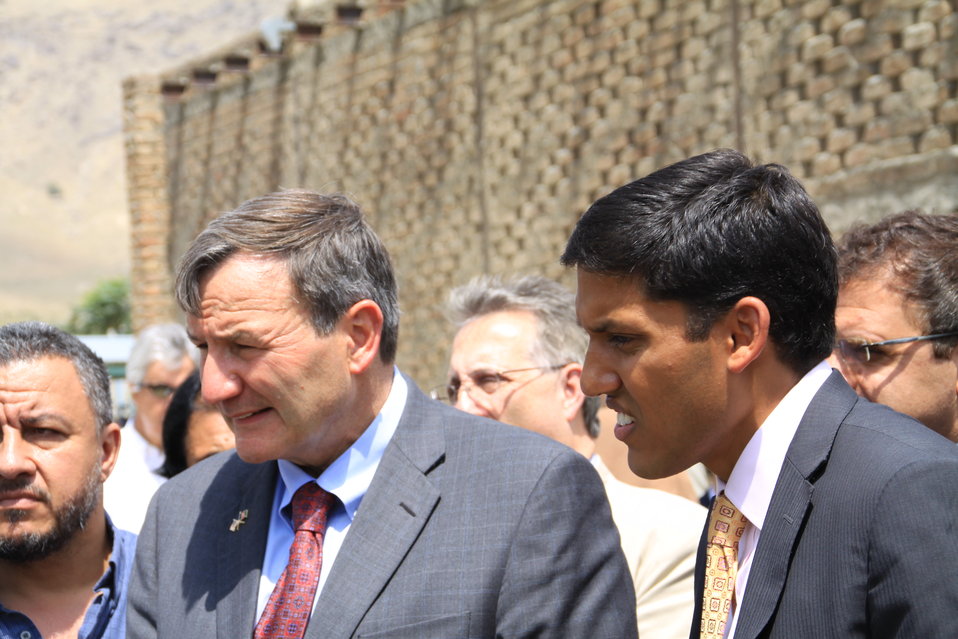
Badam Bagh Farm